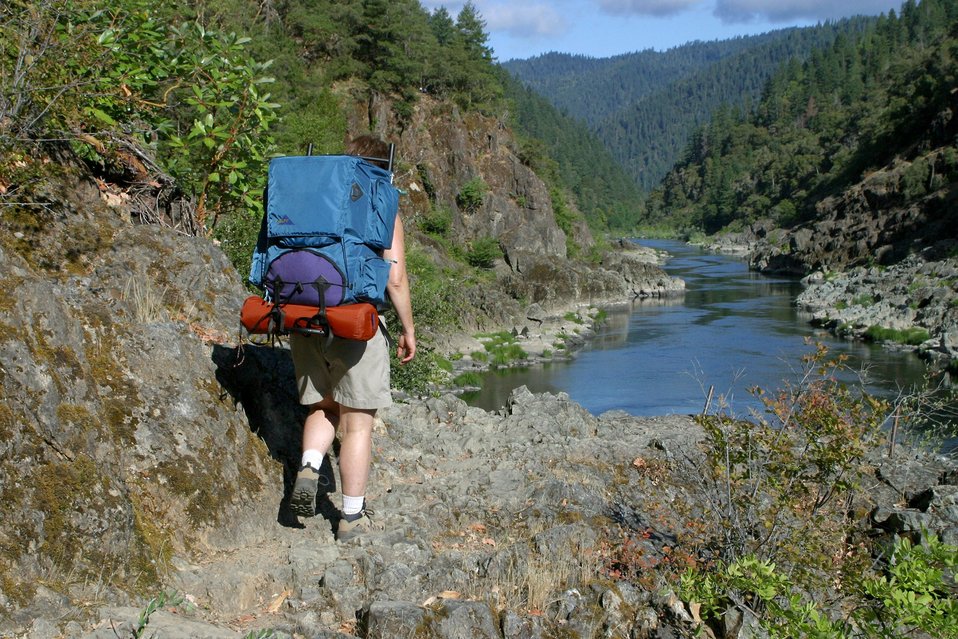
Hiking Rainie Falls Trail between Grave Creek and Rainie Falls.